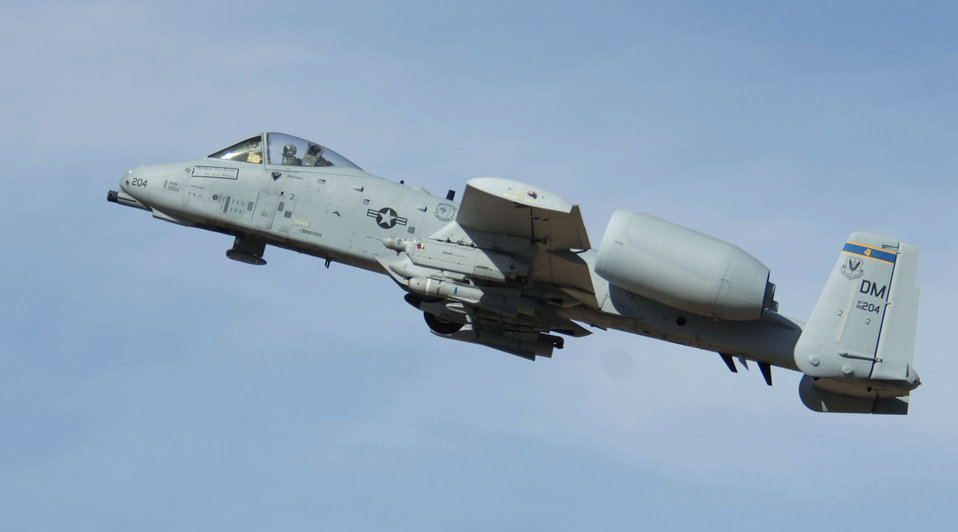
Hawgsmoke 2006

An A-10 Thunderbolt II, flies by the tower as it prepares to fire the 30 mm gun at a low angle strafe, as part of the 2006 Hawgsmoke competition, Thursday, March 23, 2006, at the Barry-Goldwater Range, Gila Bend Air Force Auxiliary Field. There are four parts of the competition. Each team has four members in which they have 100 bullets each to use toward the target. This year's competition coincides with the 30th anniversary of the Warthog. Twenty squadrons from around the world come together to gain the honor of the